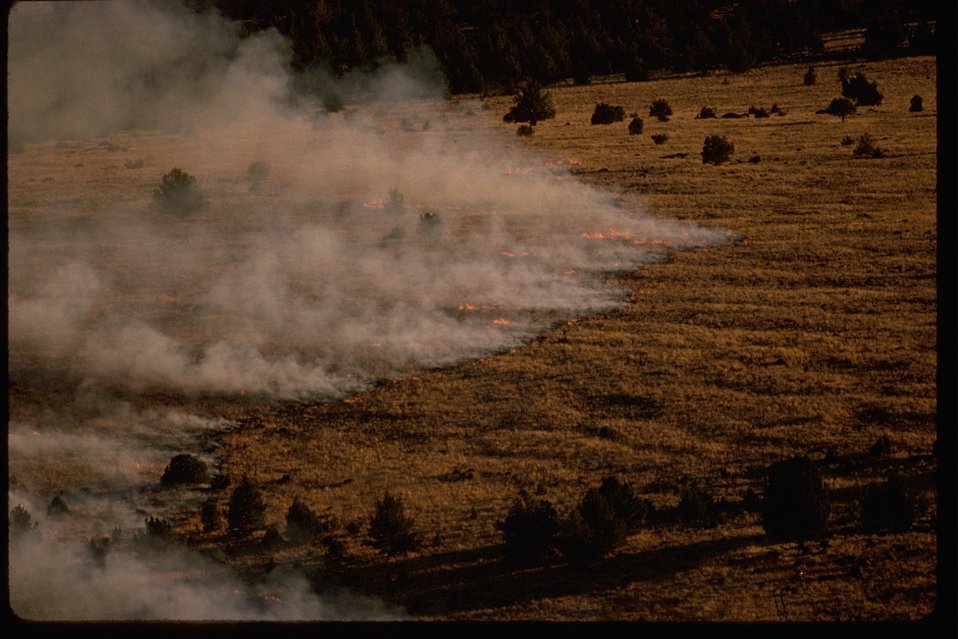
Picture taken from South Loop road in Rooster Comb. A prescribed burn in the Ankle Creek/Big Indian Creek area.